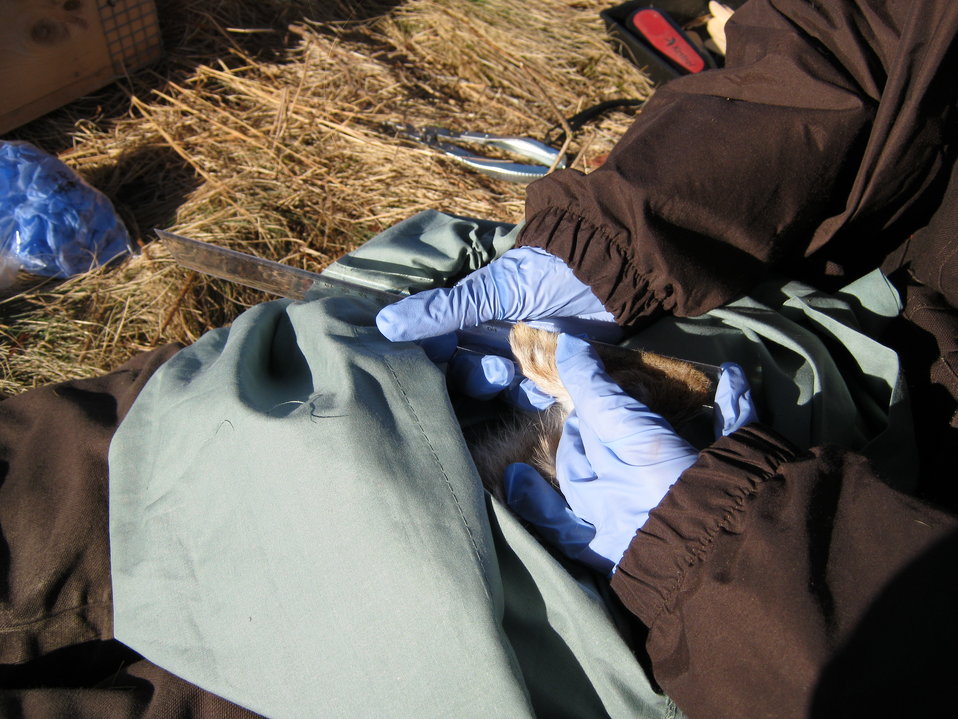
Finding New England cottontails

A Service wildlife intern takes measurements of the rabbit's ears.